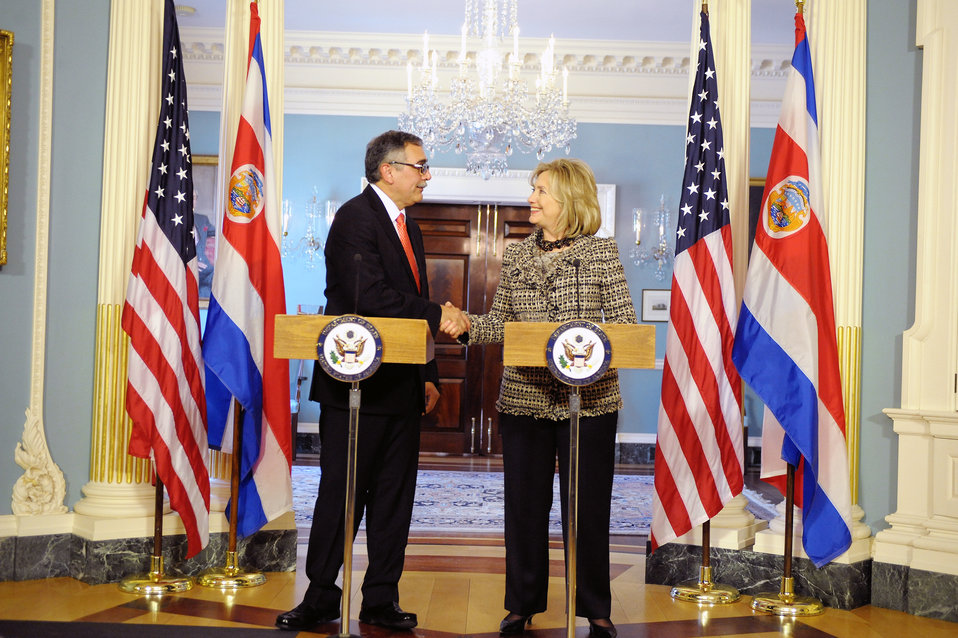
Secretary Clinton Shakes Hands With Costa Rican Foreign Minister Castro

U.S. Secretary of State Hillary Rodham Clinton shakes hands after their joint press conference with Costa Rican Foreign Minister René Castro at the U.S. Department of State in Washington, D.C., on March 4, 2011.